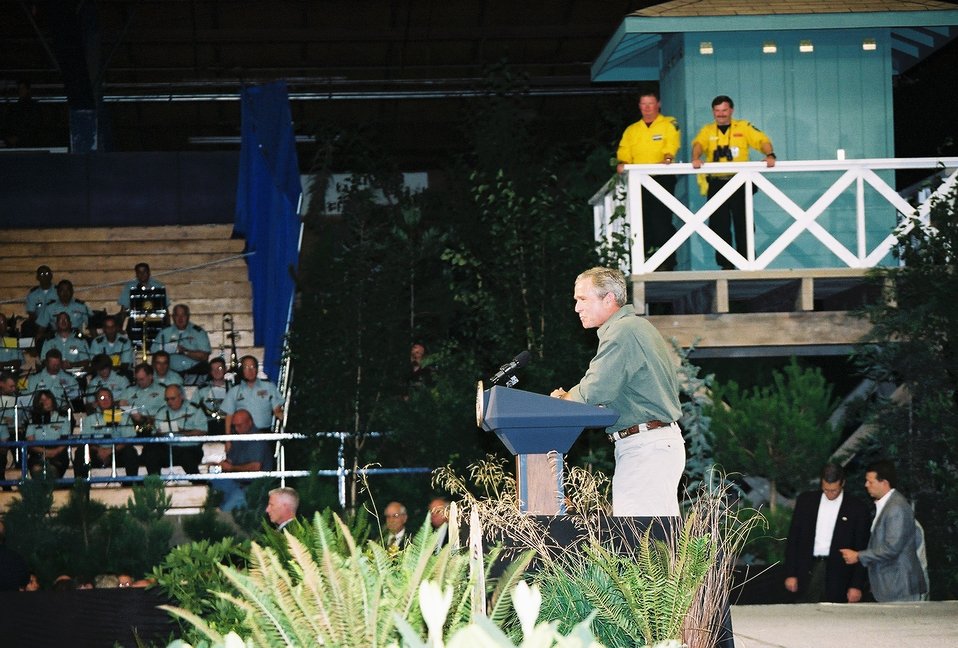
President Bush addresses an audience of more than 5,000 at the Jackson County Fairgrounds where he thanked firefighters and talked about his Healthy Forest Initiative. August 22, 2002 Photo: John Craig